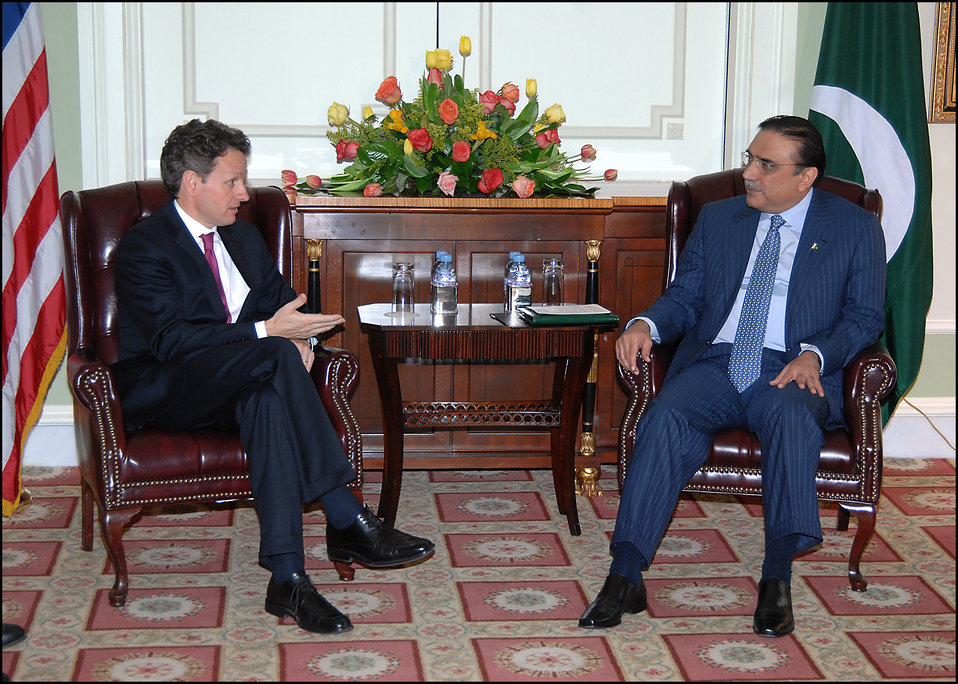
Pakistan's President Ali Asif Zardari

On May 8, 2009, Secretary Geithner met with Pakistan's President Ali Asif Zardari.